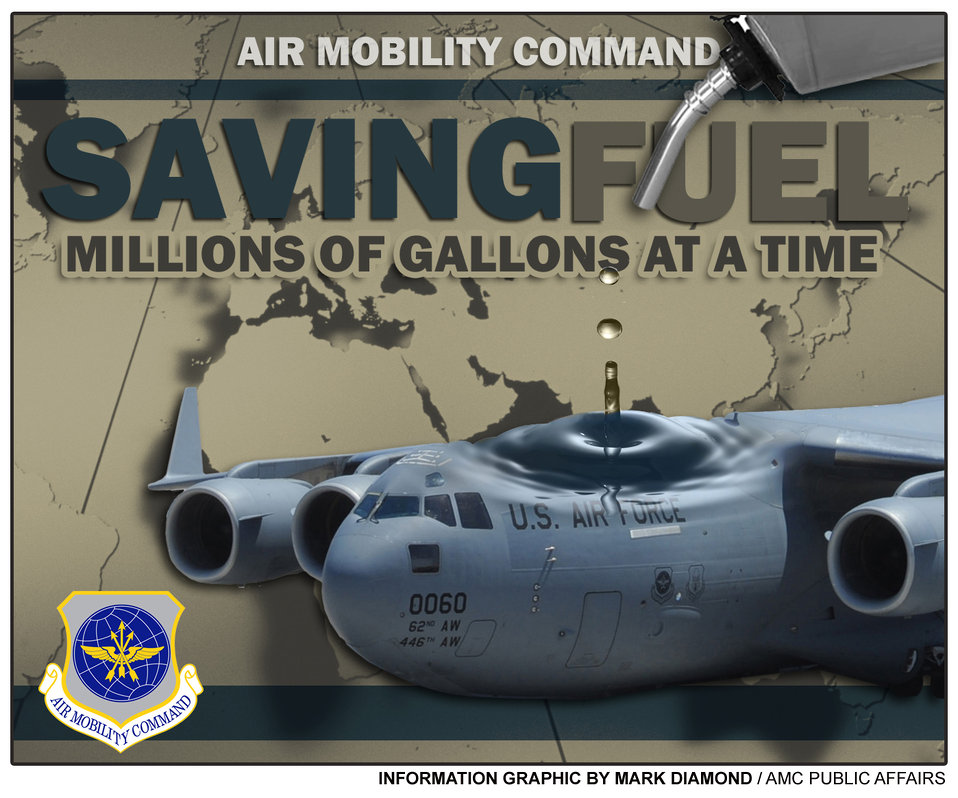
Saving Fuel ... Millions of Gallons at a Time

Air Mobility Command has the largest fleet of the biggest airframes in the Air Force and they are the Department of Defense's largest aviation fuel customer, consuming 28 percent of DOD's aviation fuel use. AMC officials are leading the charge in making energy a consideration in everything they do.